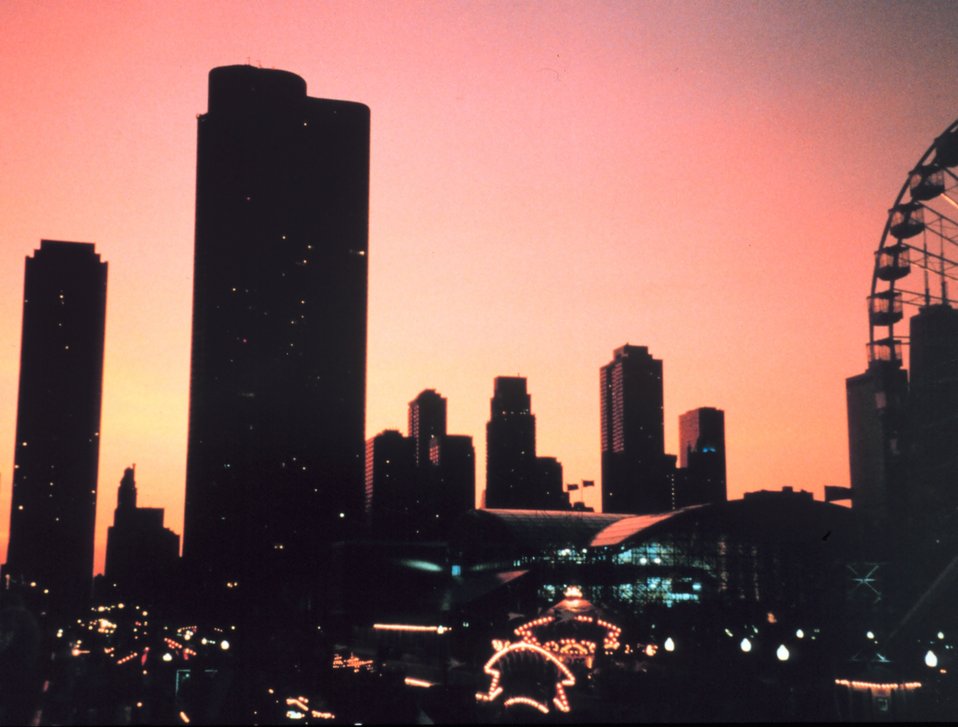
Chicago skyline at dusk